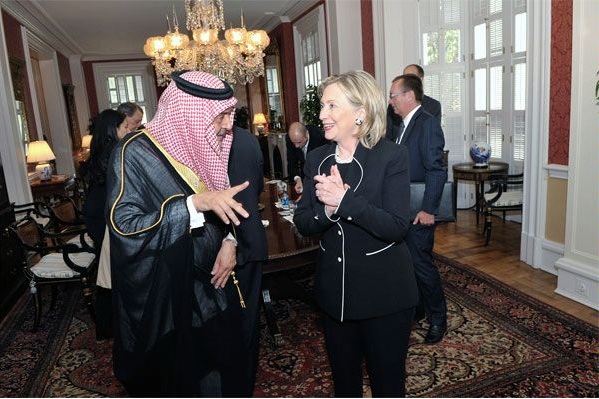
Secretary Clinton Holds Bilateral With Saudi Foreign Minister Saud Al Faisal

U.S. Secretary of State Hillary Rodham Clinton and Saudi Arabian Foreign Minister Saud Al Faisal share a laugh after their bilateral meeting at the Blair House in Washington, D.C., on June 29, 2010.